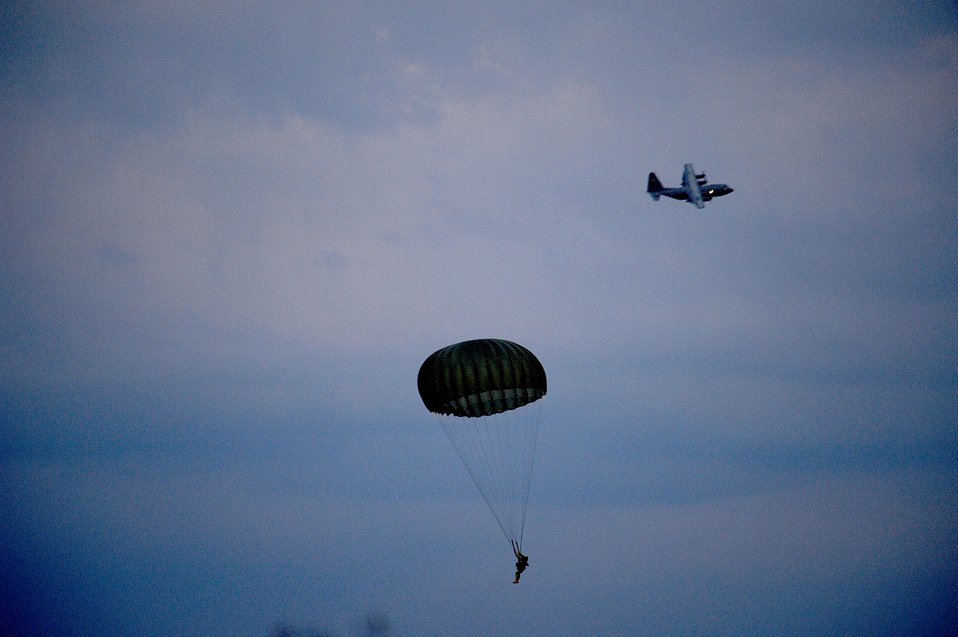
Joint Forces Entry Exercise

A Soldier parachutes down on to a drop zone after jumping from a C-130 Hercules during airborne operations Sept. 12, 2010, at Fort Bragg, N.C. Soldier is assigned to the 82nd Airborne Division at Fort Bragg.